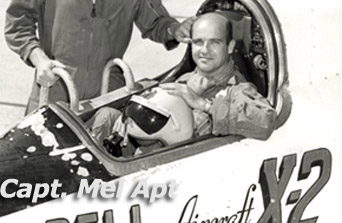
Capt. Mel Apt sits in the Bell X-2 rocket-powered aircraft at Rogers Dry Lake, Calif., near Edwards Air Force Base. He reached a speed of Mach 3.2 -- three times the speed of sound -- in the X-2 before it tumbled out of control and he was killed attempting to bail out Sept. 27, 1956.